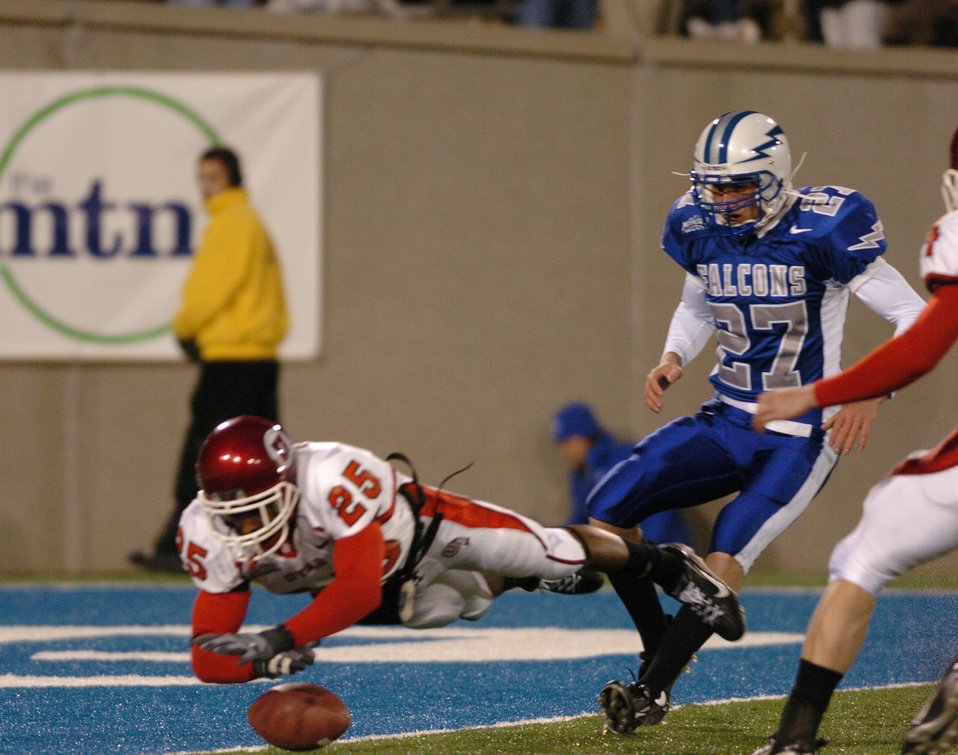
Great Punt

Utah special teams player R.J. Stanford dives to down a Louie Sakoda punt inches away from the Falcon goal line to pin the Air Force deep in its own territory Nov. 18 in Colorado Springs, Colo. The hardship was short-lived for the Falcons as quarterback Shaun Carney found receiver Mark Root two plays later for 31 yards. The Utes won the game 17-14 with a Sakoda field goal as the clock ran out.